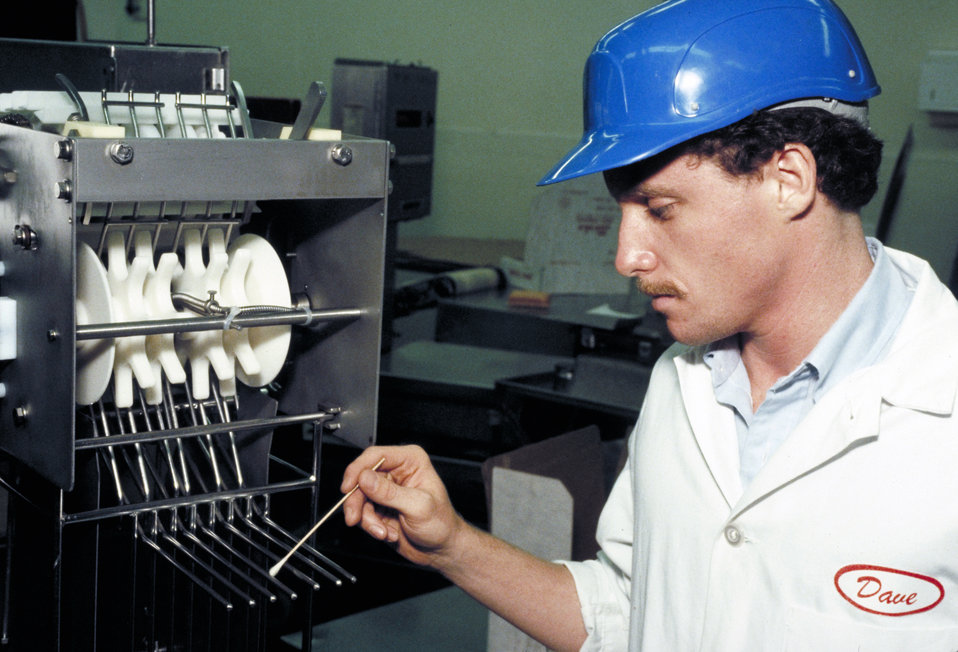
Plant employee conducts sanitation standard operating procedures at a critical control point on operating equipment to ensure that the facility is conducting its operation in a sanitary environment and in compliance with the U.S. Department of Agriculture’s (USDA) Food Safety Inspection Service (FSIS) Hazard Analysis and Critical Control Points (HACCP) requirements on June 15, 1995.